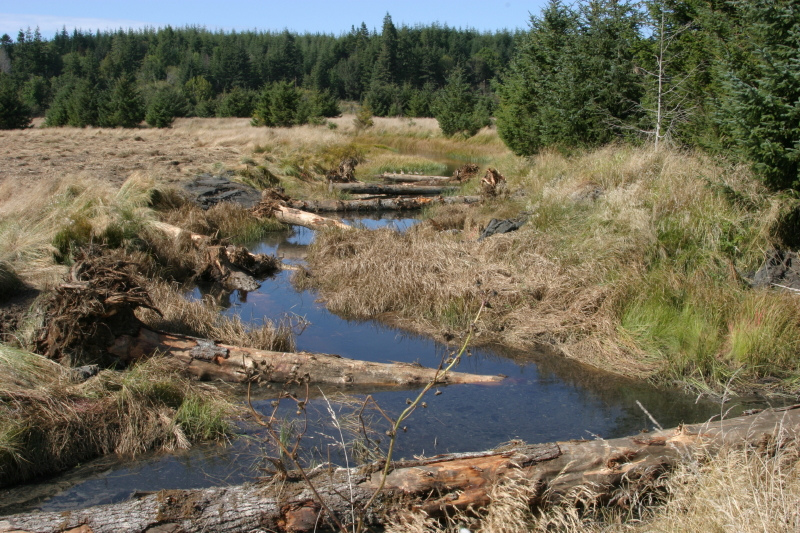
Logs in Redd Creek

Large logs placed in Redd Creek channel will provide fish habitat for coastal cutthroat trout, coho and Chinook salmon.
NOTE: Photo is of the Ni-les'tun Tidal Marsh Restoration Project on the Bandon Marsh National Wildlife Refuge.